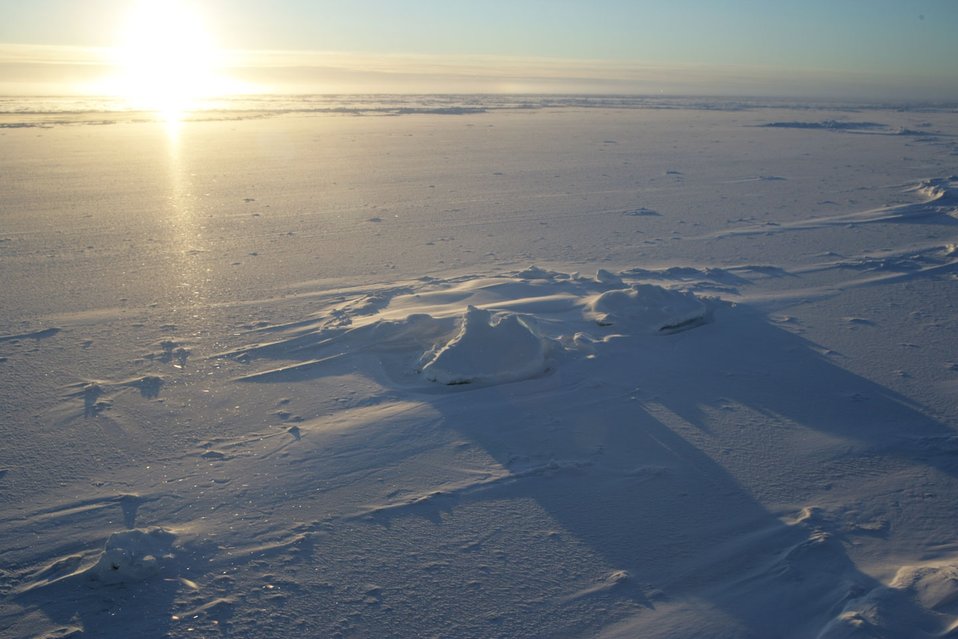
An Arctic sunrise.